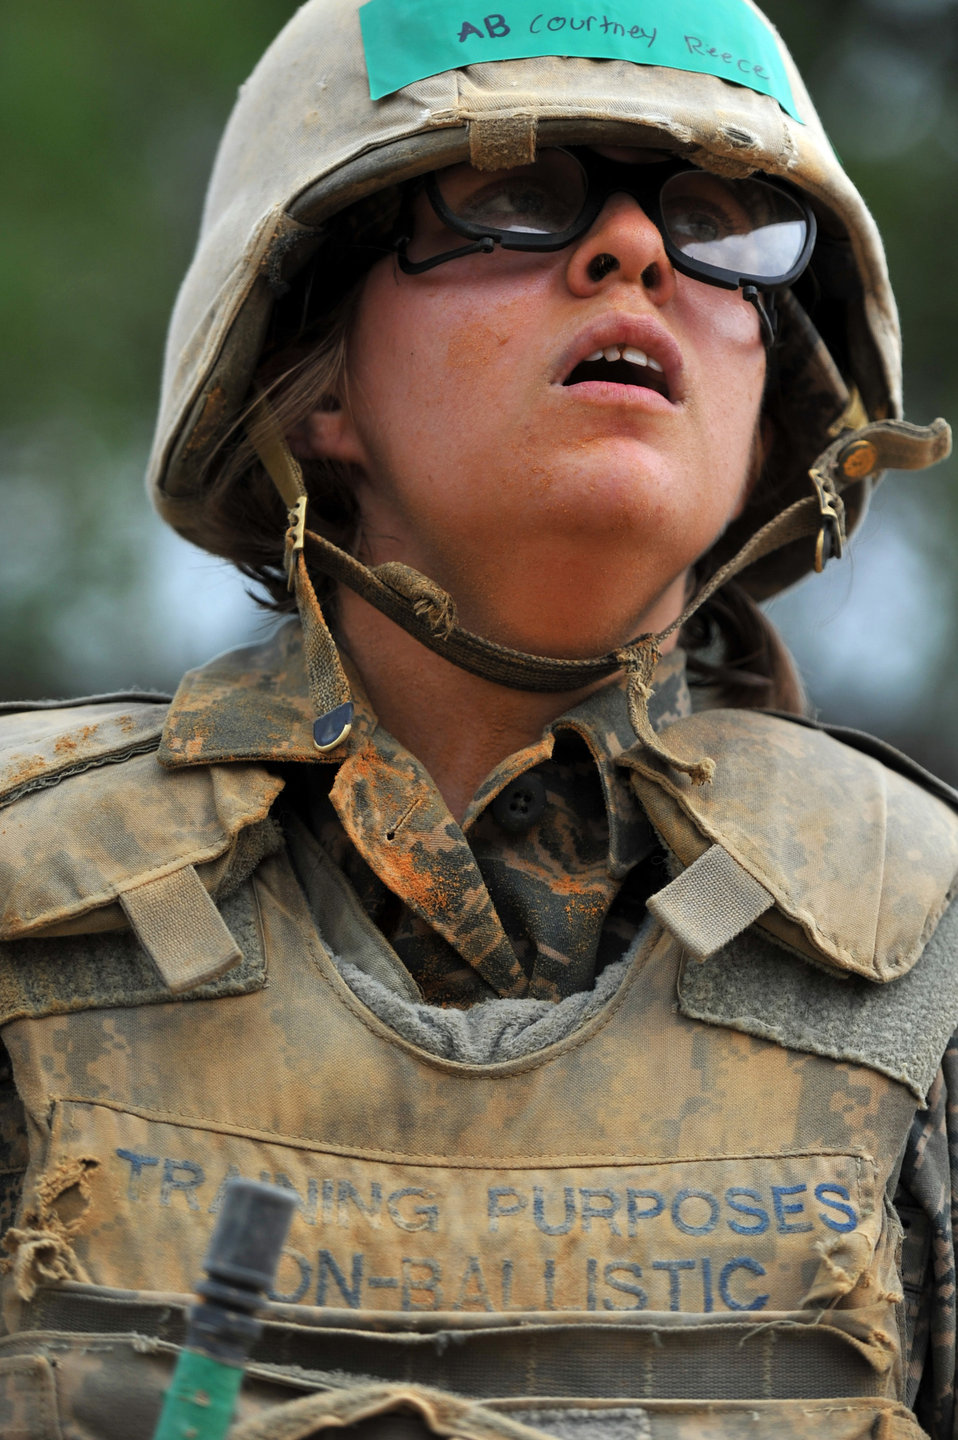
BEAST

Basic trainees go through their sixth week of Air Force basic military training at the Basic Expeditionary Airman Skills Training on May 25, 2011, at Lackland Air Force Base, Texas.